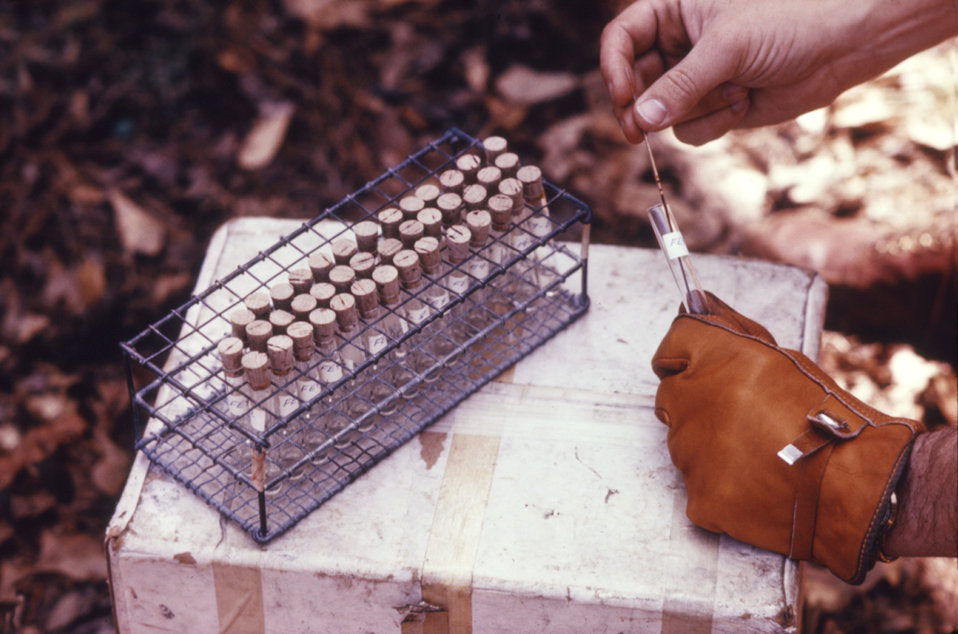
This CDC field clinician is collection and processing vertebrate blood specimens for subsequent arbovirus studies.